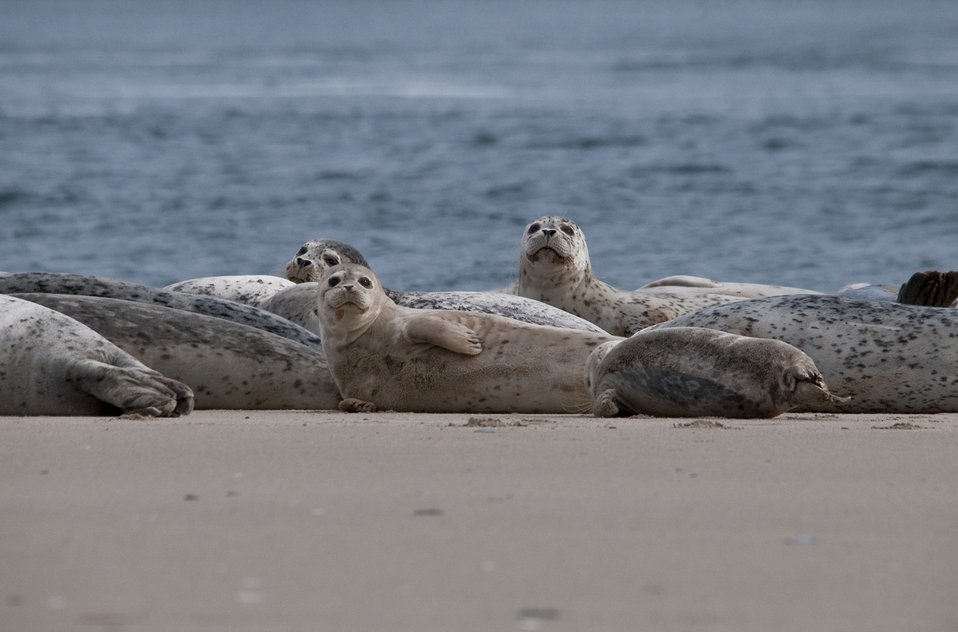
Harbor Seals, Oregon Coast national wildlife refuges

Harbor seals soak up the sun on a beach in the Oregon Coast National Wildlife Refuge complex.